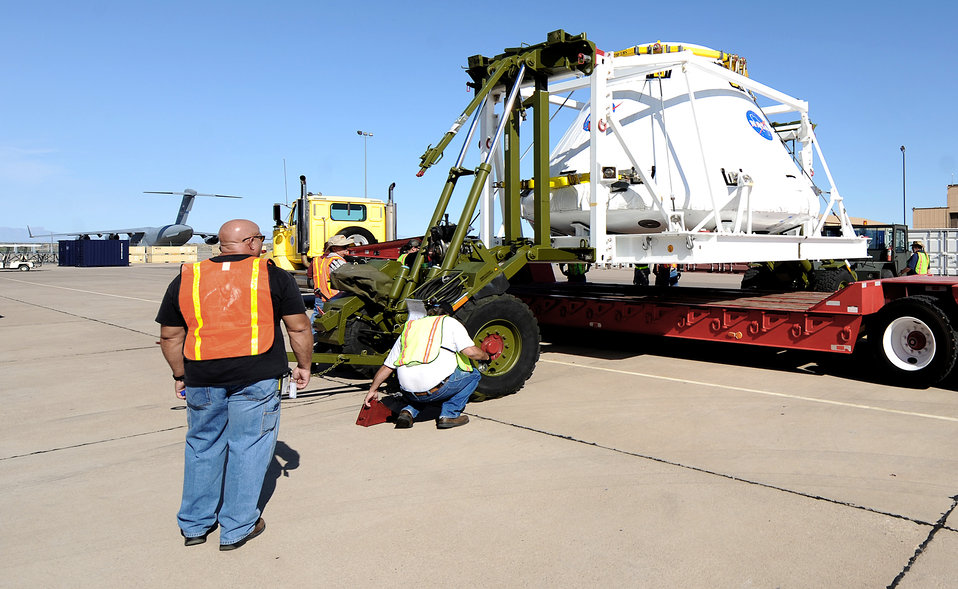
Next-gen spacecraft stops at Holloman

Crews work to place the Pad Abort One Crew Module on a tractor-trailer Aug. 20 at Holloman Air Force Base, N.M., before was transported to White Sands Missile Range, N.M. Aug. 21. The module is part of the Orion Program which will take the next generation of astronauts to space when the shuttle is replaced.